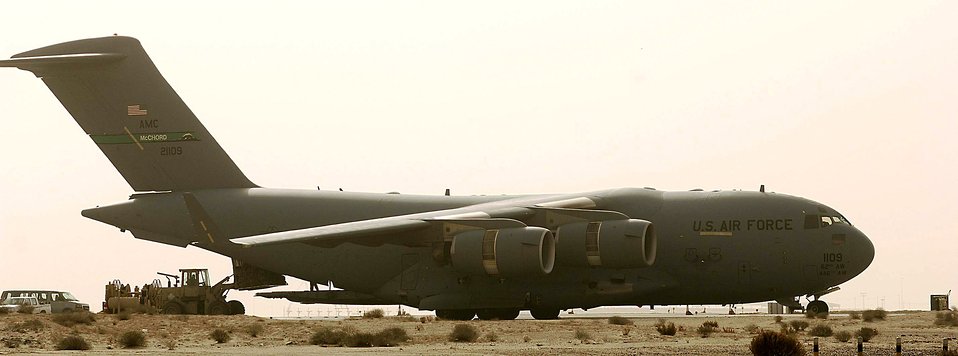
Jan. 30 airpower summary: C-17s deliver the goods

A C-17 Globemaster III from McChord Air Force Base, Wash., has its cargo unloaded at a Southwest Asia air base. The aircraft is moving troops throughout Iraq.